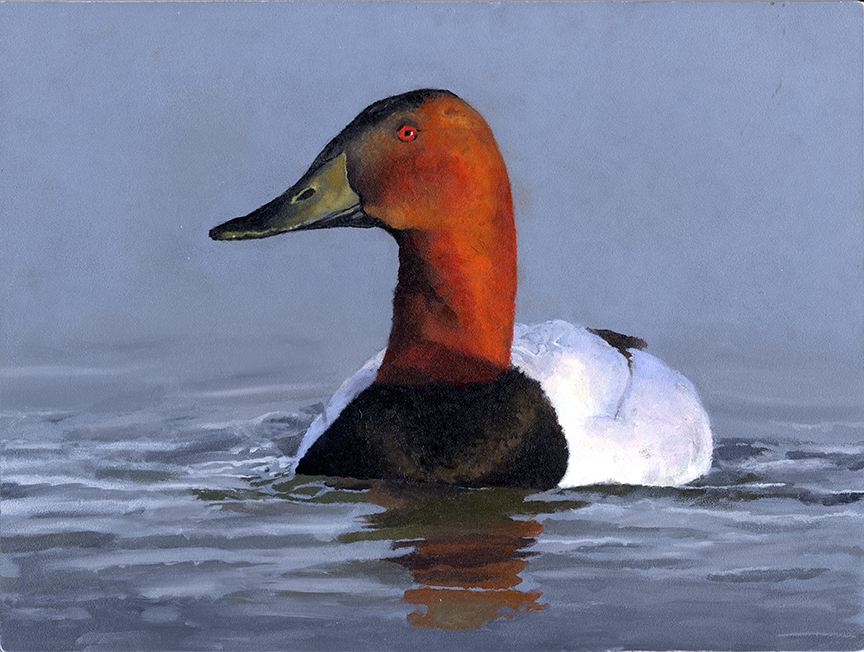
JRDuck2013SD

2013 Junior Duck Stamp Best of Show-South Dakota